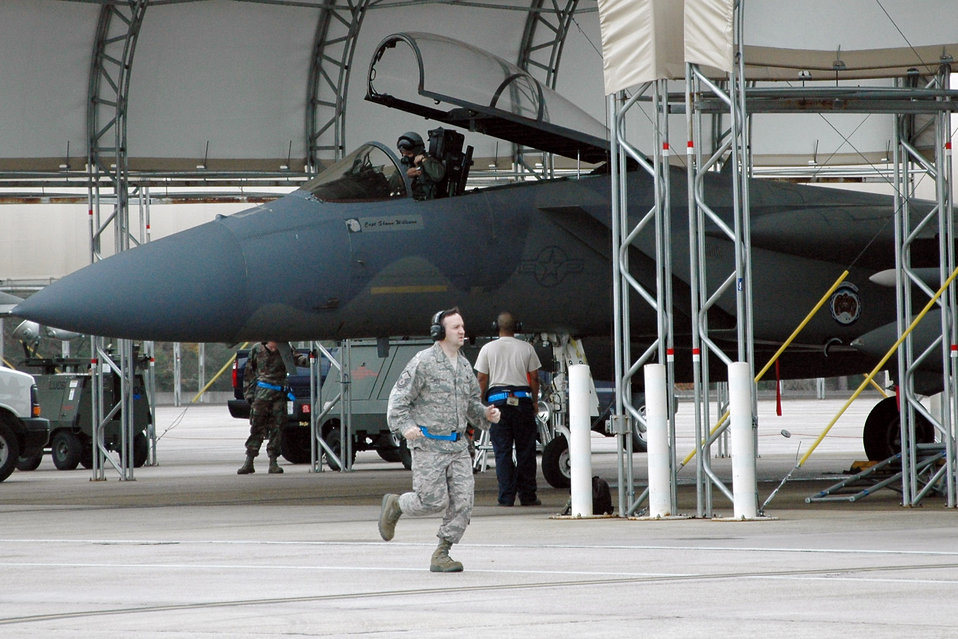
Eglin Airmen test readiness during weeklong exercise

Master Sgt. Shay Thigpen hurriedly prepares an F-15 Eagle for takeoff in simulated alert status Dec. 17 at Eglin Air Force Base, Fla. Sergeant Thigpen is assigned to the 58th Aircraft Maintenance Unit.